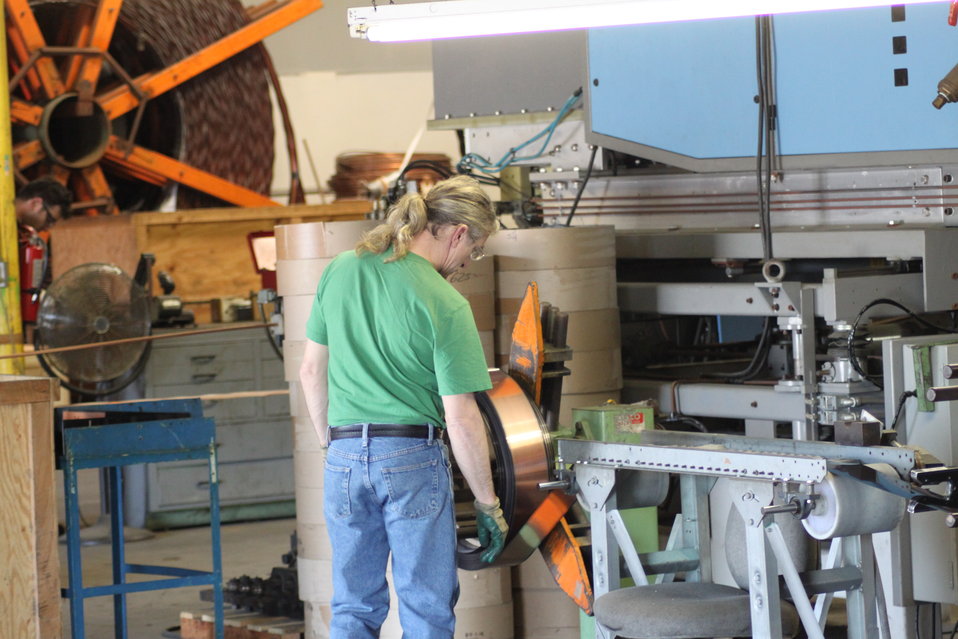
Norm 001